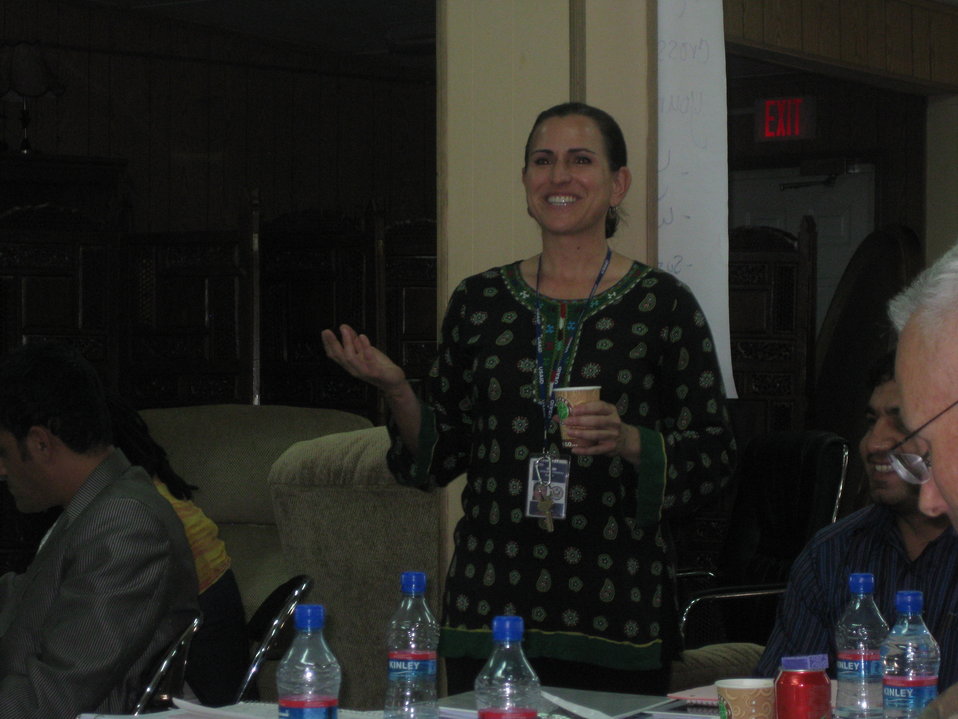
Afghan Youth Voices 050